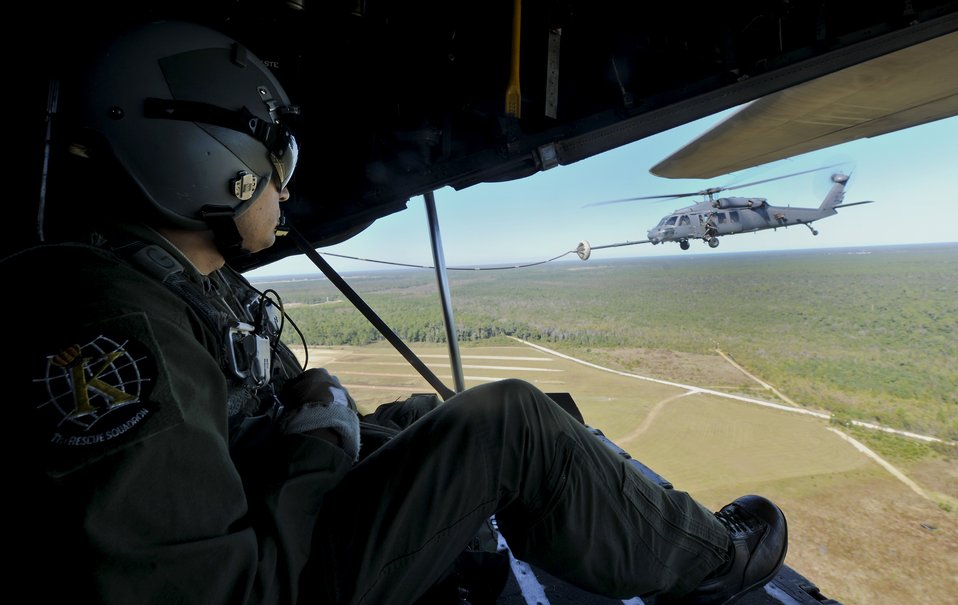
Nice view

Tech. Sgt. Rafael Orozco, 71st Rescue Squadron loadmaster, observes as an HH-60G Pave Hawk from the 41st Rescue Squadron refuels during a combat search and rescue airpower demonstration Oct. 29, 2010, over Moody Air Force Base, Ga. The Airmen were part of a Moody AFB celebration for the annual Flying Tigers reunion.